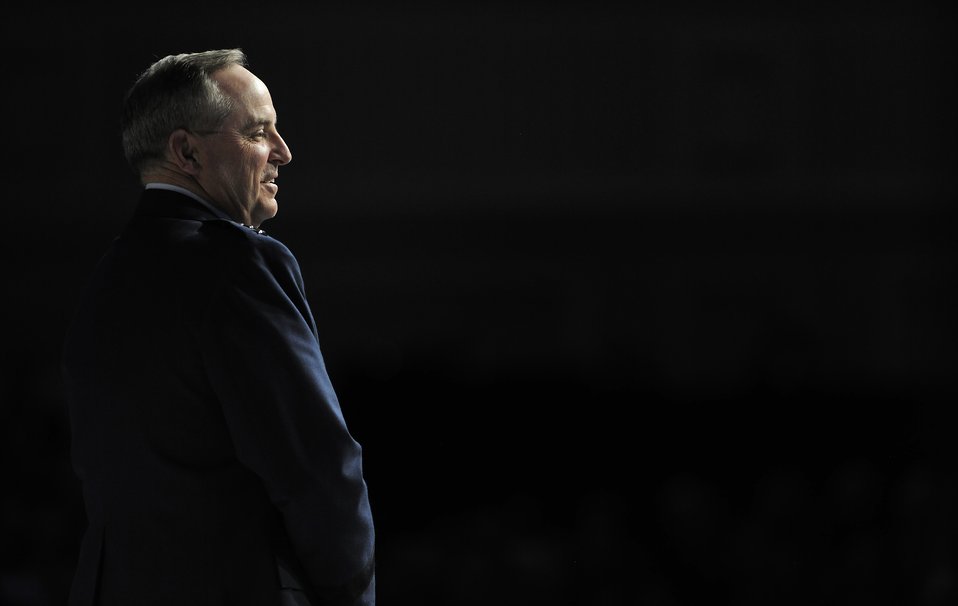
CSAF talks Air Force innovation, evolution at AFA Conference

Air Force Chief of Staff Gen. Mark A. Welsh III presents the